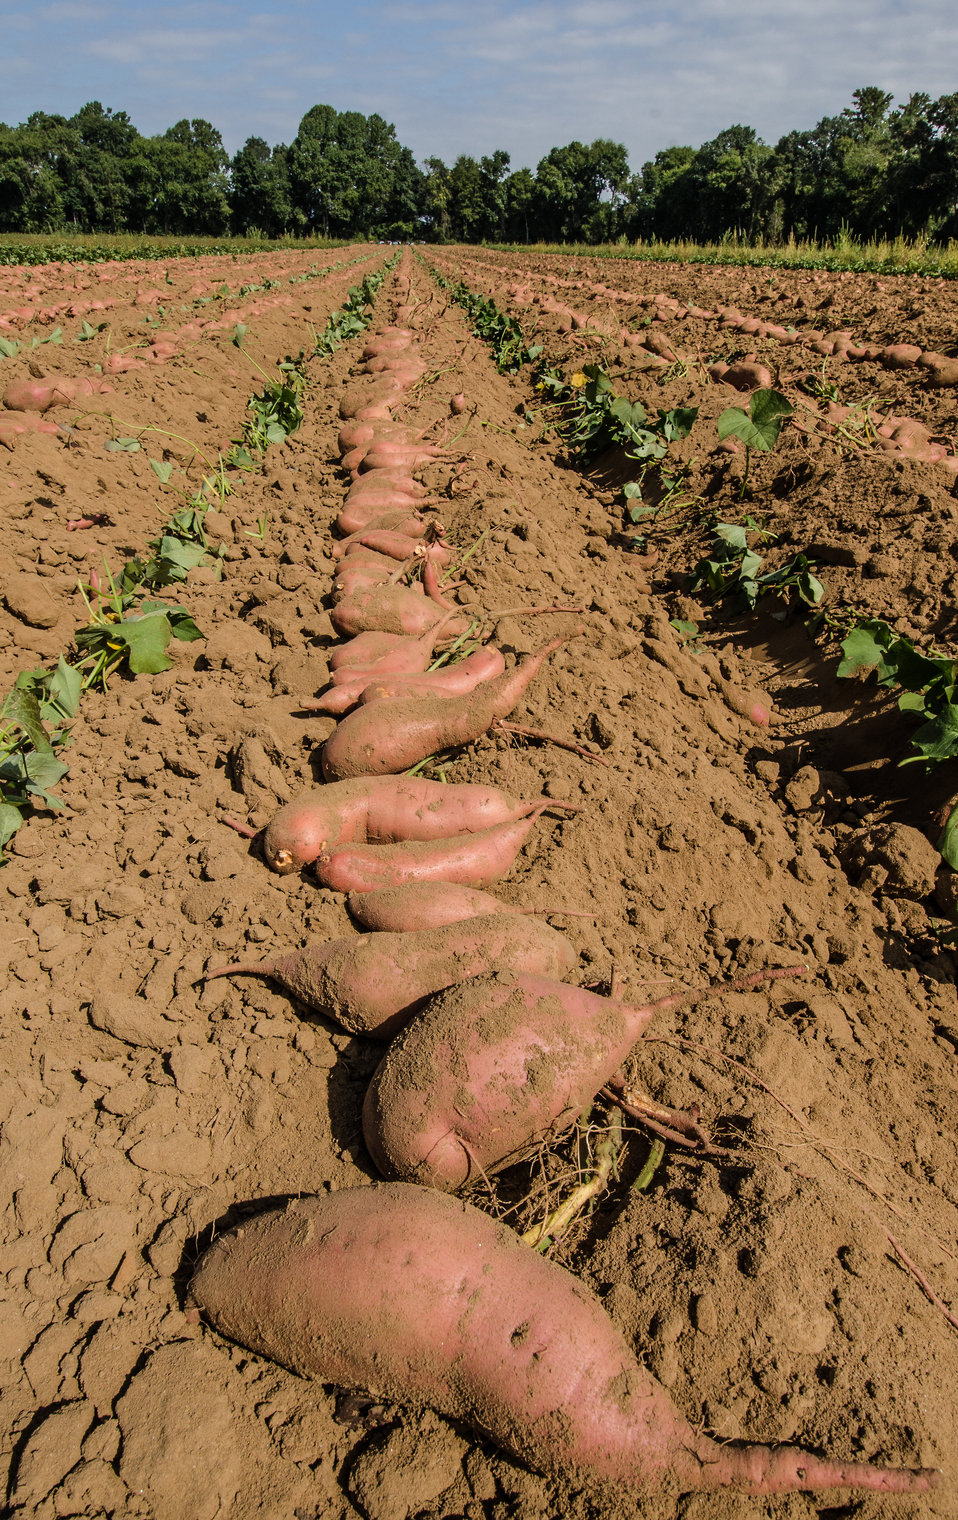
Harvested hand picked large sweet potatoes, at Kirby Farms in Mechanicsville, VA on Friday, Sept. 20, 2013. 200 acres of the farm are devoted to eggplant, spinach, beets, tomato, jalapeno peppers, melons and a variety of greens. Soybeans and small grain are grown on the remaining 300 acres. Using rotational crop practices allows Kirby Farms to double and triple crop yields. Wholesalers, who buy from this farm, sell the produce to major supermarkets in the Mid-Atlantic region, from North Carolina to Maryland. Restaurants in the local area prepare and serve the local bought produce to patrons in the Richmond, VA metropolitan area.